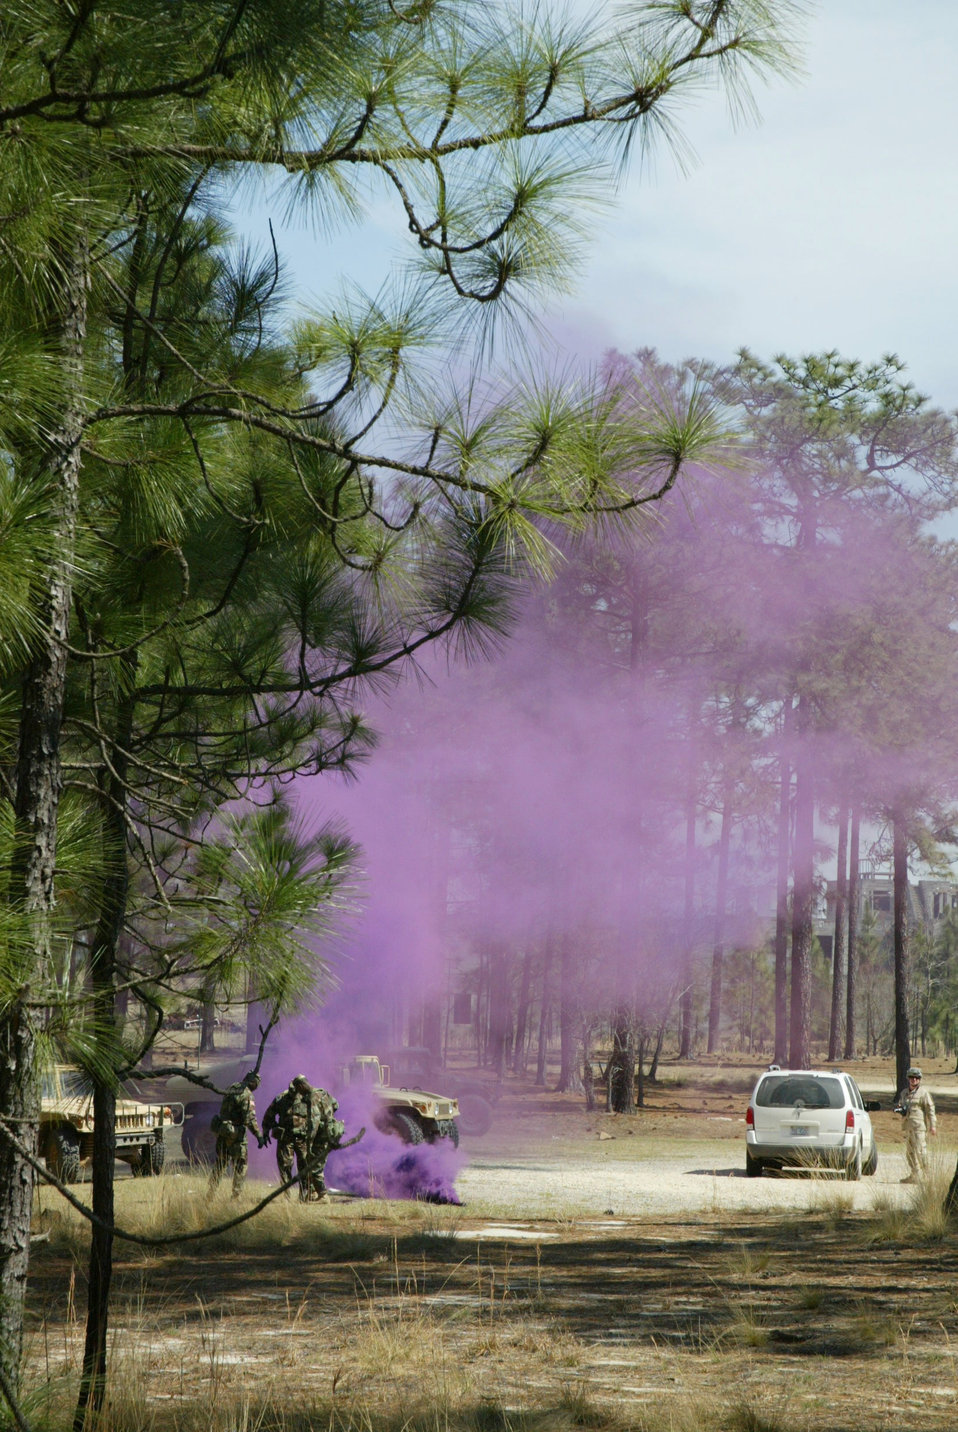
Provincial reconstruction team training

A simulated explosion on Fort Bragg, N.C., helps create a realistic training scene for the provincial reconstruction teams training to go to Afghanistan.